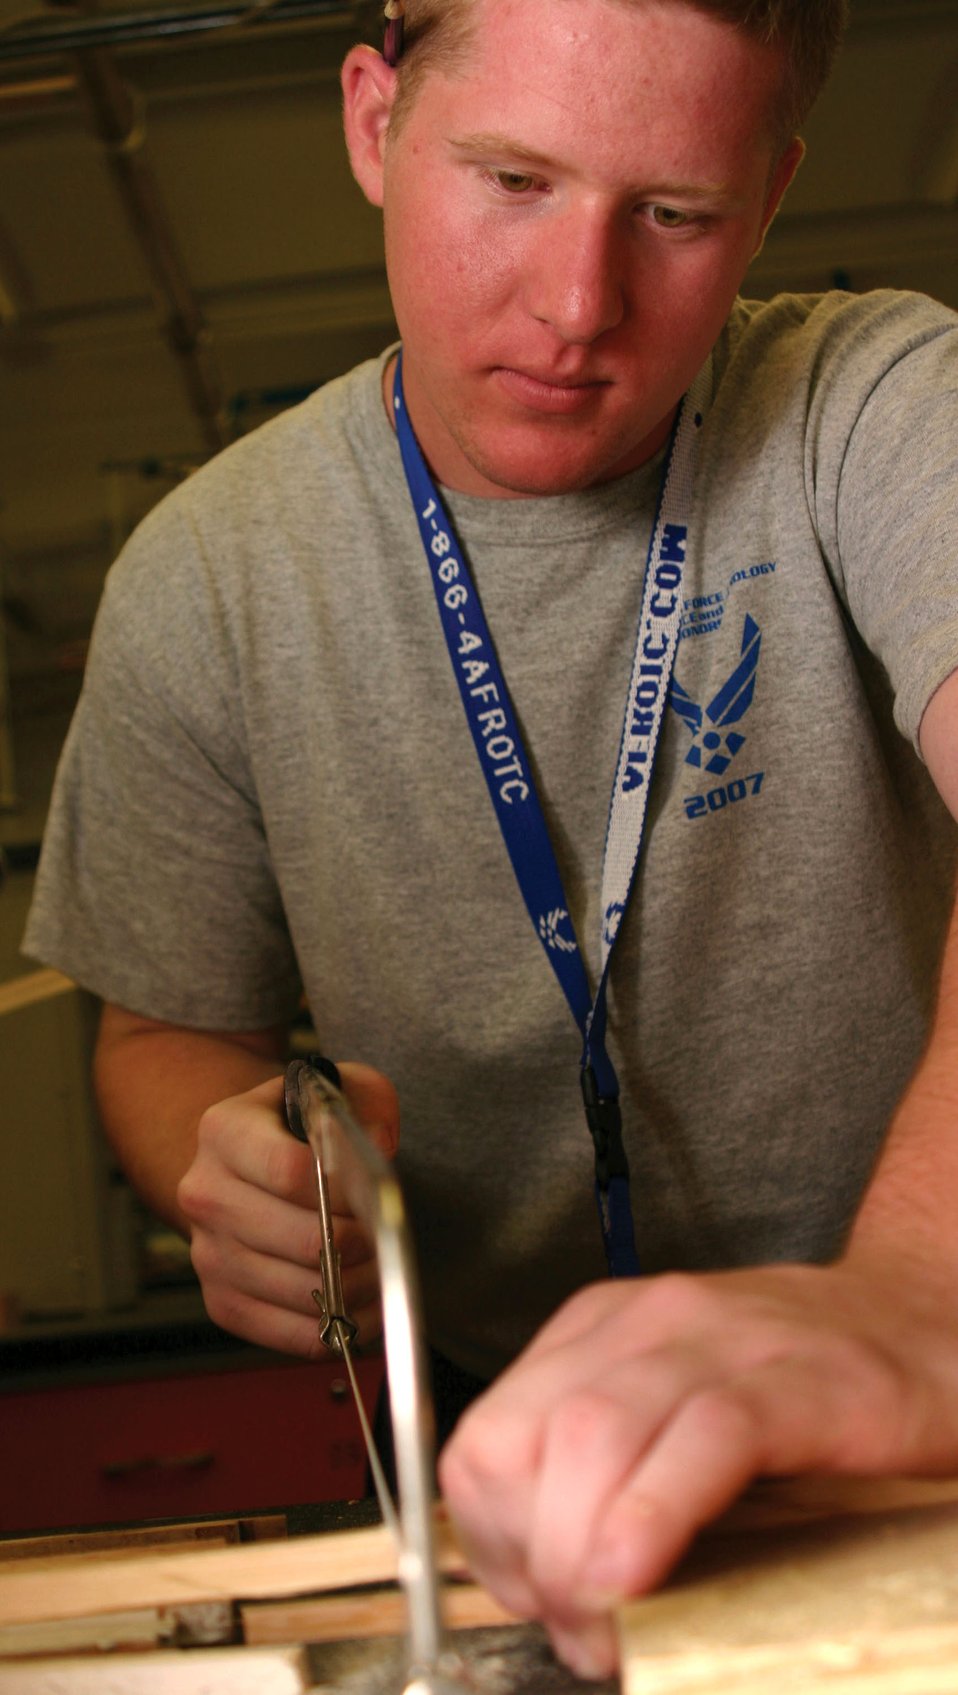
Junior ROTC cadets explore Air Force careers

Air Force Junior ROTC Cadet Garrett Tharp saws a piece of wood to use for a frame on his bottle rocket car July 25 during a rocket car construction contest at the University of New Mexico in Albuquerque. Cadets from Junior ROTC units worldwide visited various science and technology centers as part of the 2007 Air Force Junior ROTC Aerospace and Technology Honor Camps. Approximately 450 cadets attended one of eight camps this year in New Mexico and Oklahoma. Currently, there are more than 100,000 cadets in the Air Force Junior ROTC program worldwide.